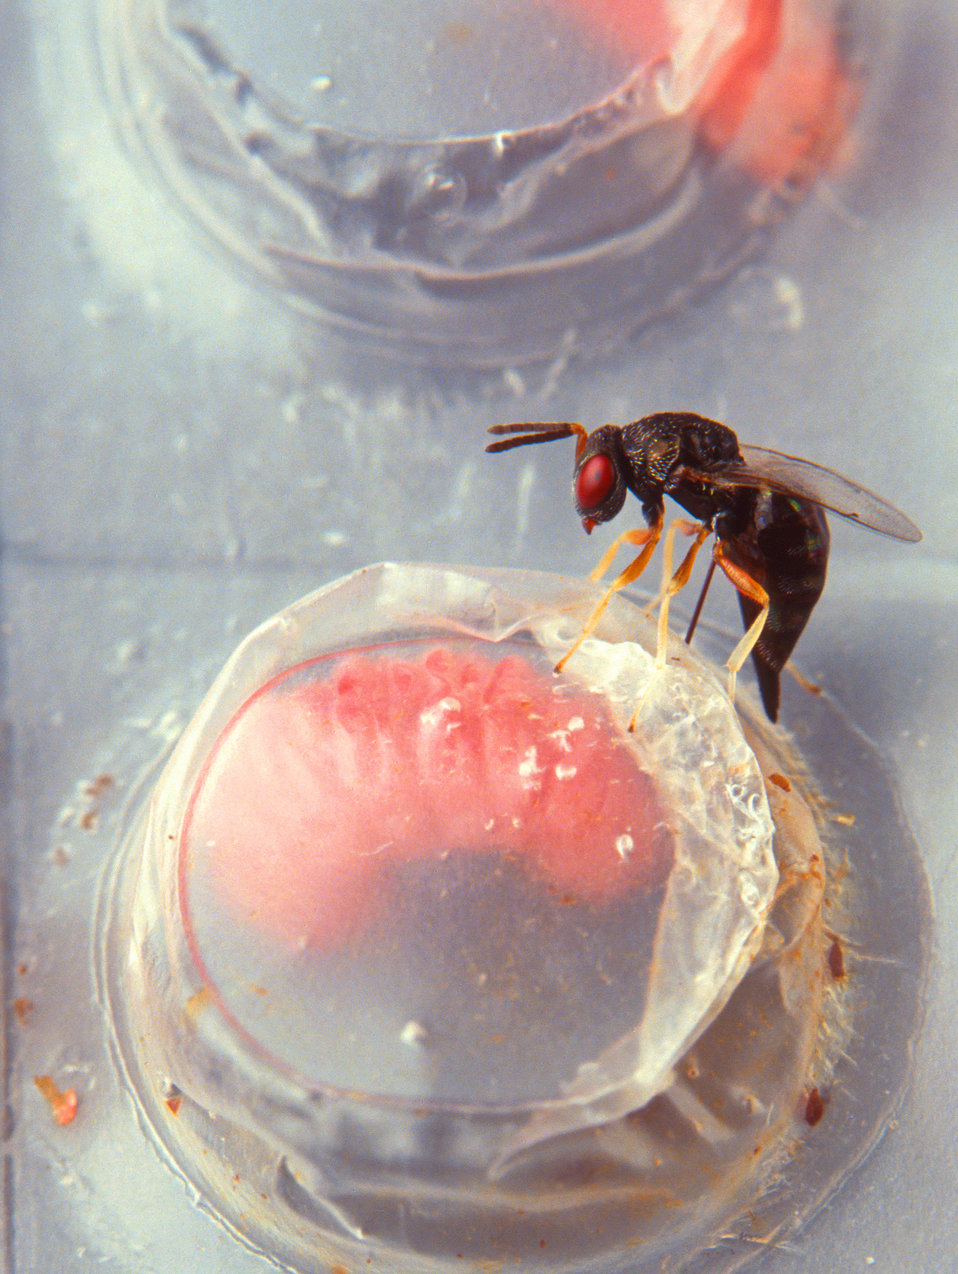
A female Catolaccus grandis wasp homes in on a boll weevil larva. This 3/8 inch parasitic wasp, a native of Mexico, inserts her ovipositor through the plastic film covering the individual rearing cell and immobilizes the larva and withdraws nourishment sufficient to complete development of her eggs. Later, she or another female will revisit the boll weevil larva and deposit an egg next to it. The larva soon becomes an easy meal for a newly-hatched wasp larva.